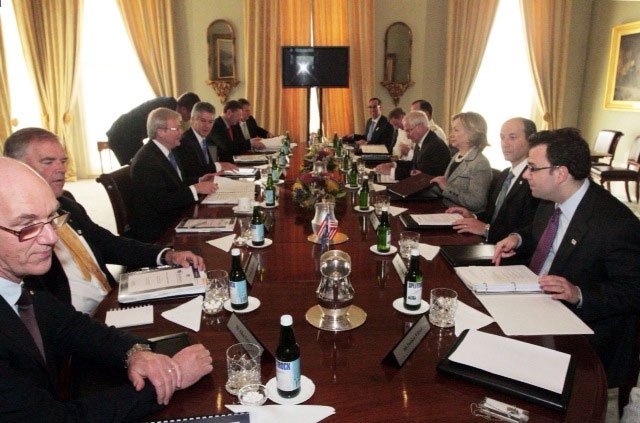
The AUSMIN Delegation Begins the First Session

The AUSMIN delegation sits down for the first session at Government House in Melbourne, Australia, on November 8, 2010. Individuals in the photo include: (left side of the table) Australian Ambassador to the U.S. Kim Beazley, second individual from the front, Australian Foreign Minister Kevin Rudd, third individual from the front, Australian Defense Minister Stephen Smith, fourth individual from the front; (right side of the table) U.S. Ambassador to Australia Jeff Bleich, second from the front, U.S. Secretary of State Hillary Rodham Clinton, third from the front, and U.S. Secretary of Defense Robert Gates, fourth from the front.